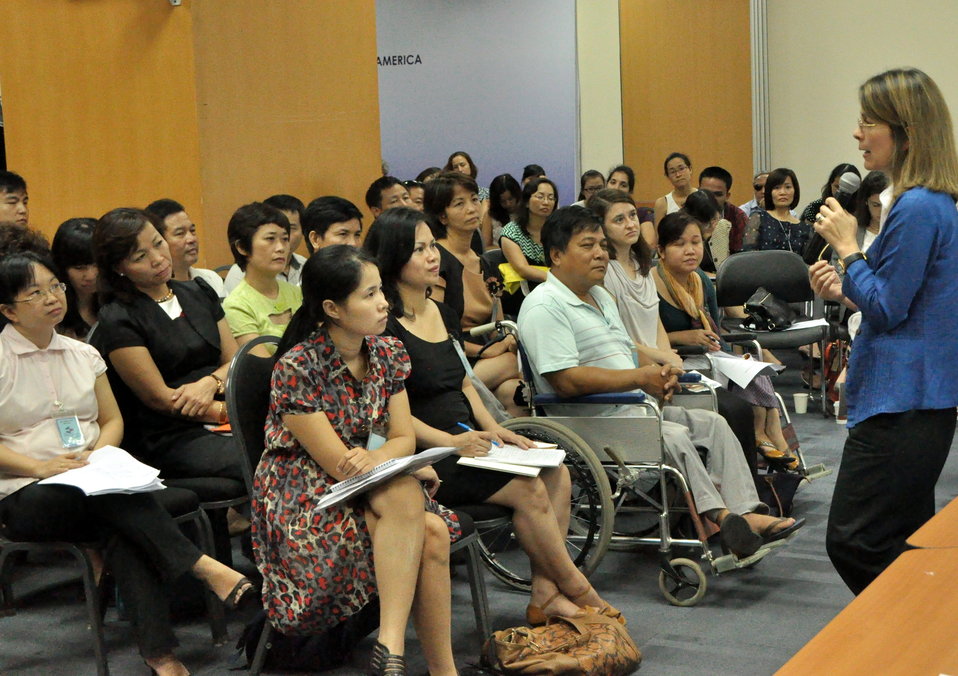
Development Grants Program Workshop in Hanoi

July 24, 2013